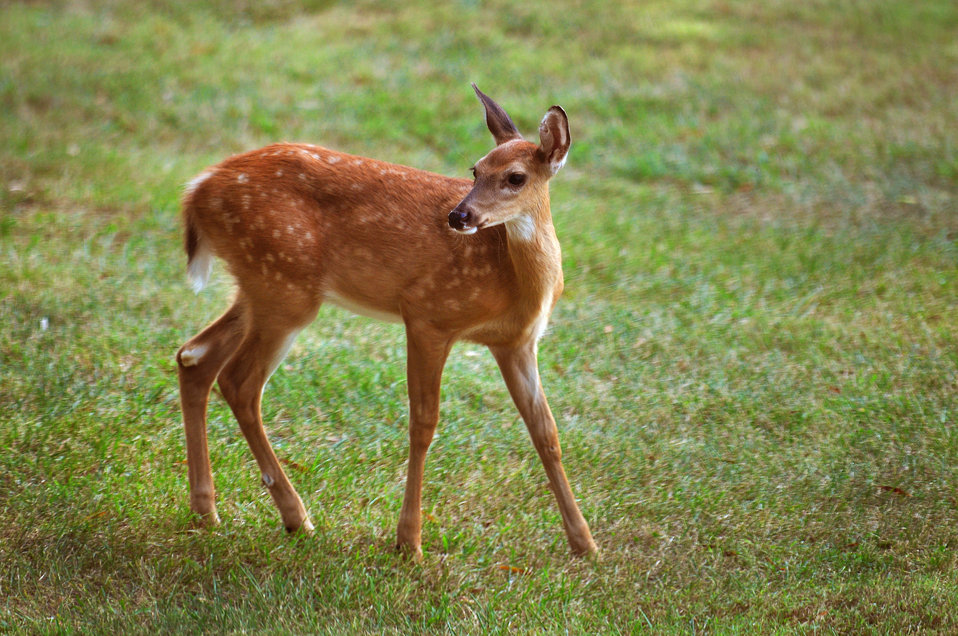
White-tailed Fawn Near DOE Fed. Bld. Oak Ridge 2013

13-113 DOE photo Lynn Freeny 9-11-2013 Oak Ridge Tennessee